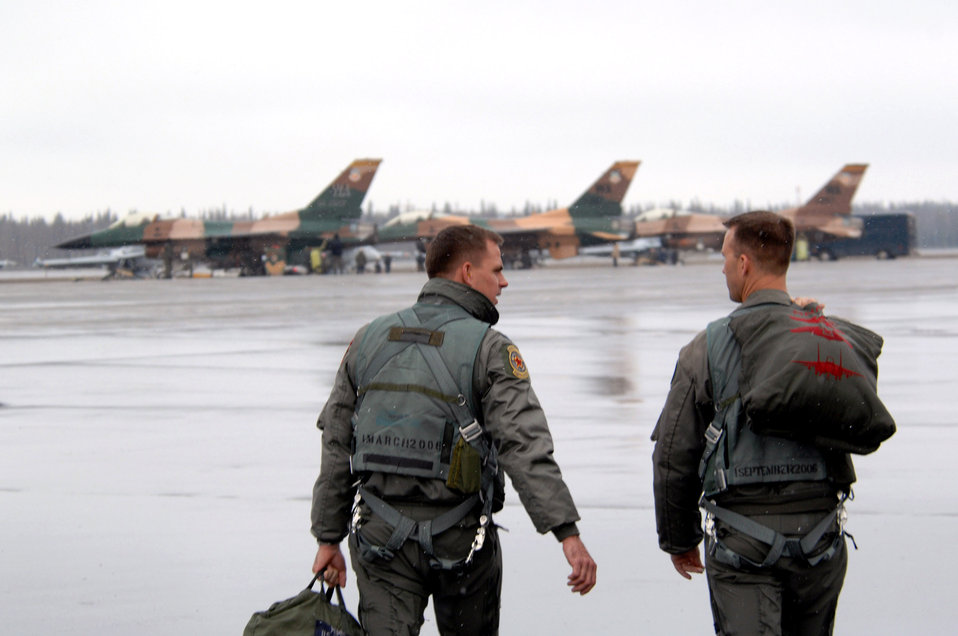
Air combat ready at Red Flag-Alaska

Two F-16 Fighting Falcon pilots walk toward their jets prior to a mission April 12 during Red Flag-Alaska 07-1 at Eielson AFB, Alaska. Red Flag-Alaska is a Pacific Air Forces-directed field training exercise for U.S. forces flown under simulated air combat conditions. It is conducted on the Pacific Alaskan Range Complex with air operations flown out of Eielson and Elmendorf Air Force Bases. The pilots are from the 64th Aggressor Squadron at Nellis Air Force Base, Nev.